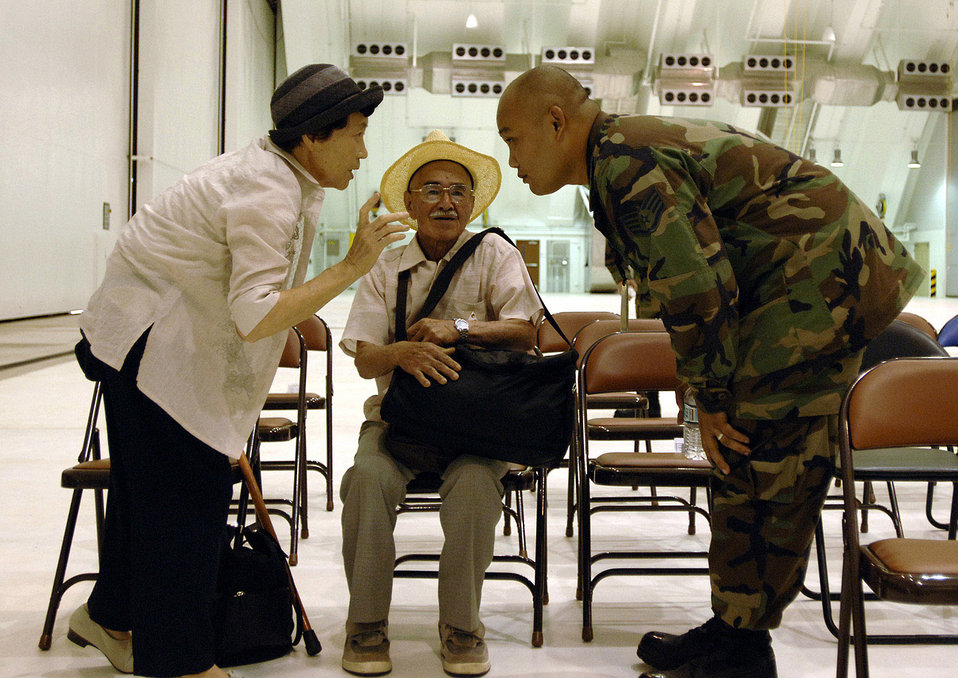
Anderson answers call for help

ANDERSEN AIR FORCE BASE, Guam -- Staff Sgt. Bernard Mallada speaks with an elderly Japanese tourist after their plane was diverted here Aug. 19. More than 800 passengers arrived safely and cleared through customs after their commercial flights were diverted because of an emergency that temporarily closed Won Pat International Airport, Guam. Airmen and local custom agents and authorities worked together to process passengers on eight airliners. Sergeant Mallada is assigned to the 36th Maintenance Squadron.